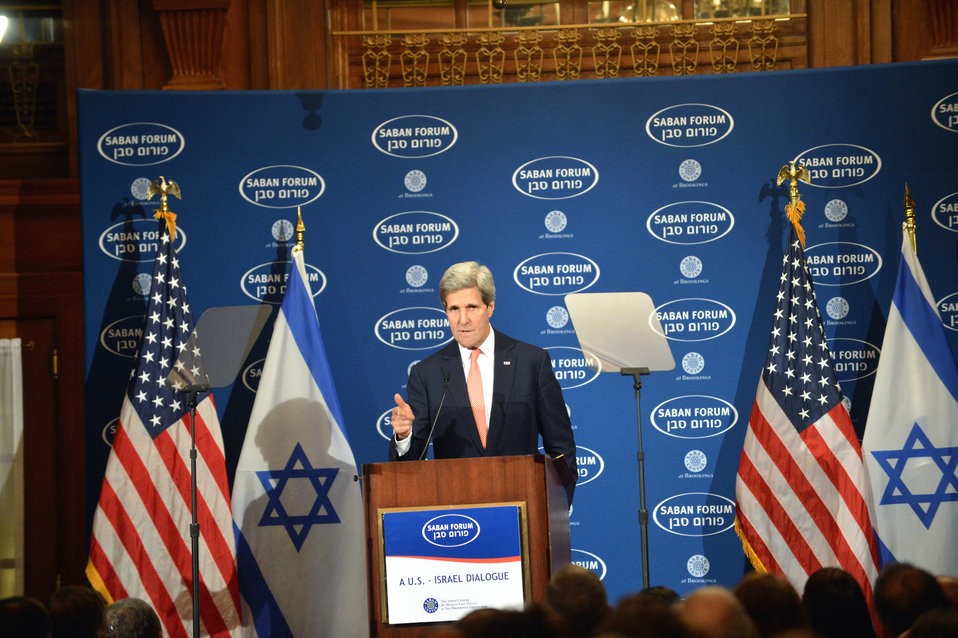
Secretary Kerry Delivers Remarks at the Saban Forum

U.S. Secretary of State John Kerry delivers remarks at the Brookings Institution's 10th annual Saban Forum, 'Power Shifts: U.S.-Israel Relations in a Dynamic Middle East,' in Washington, D.C., on December 7, 2013.